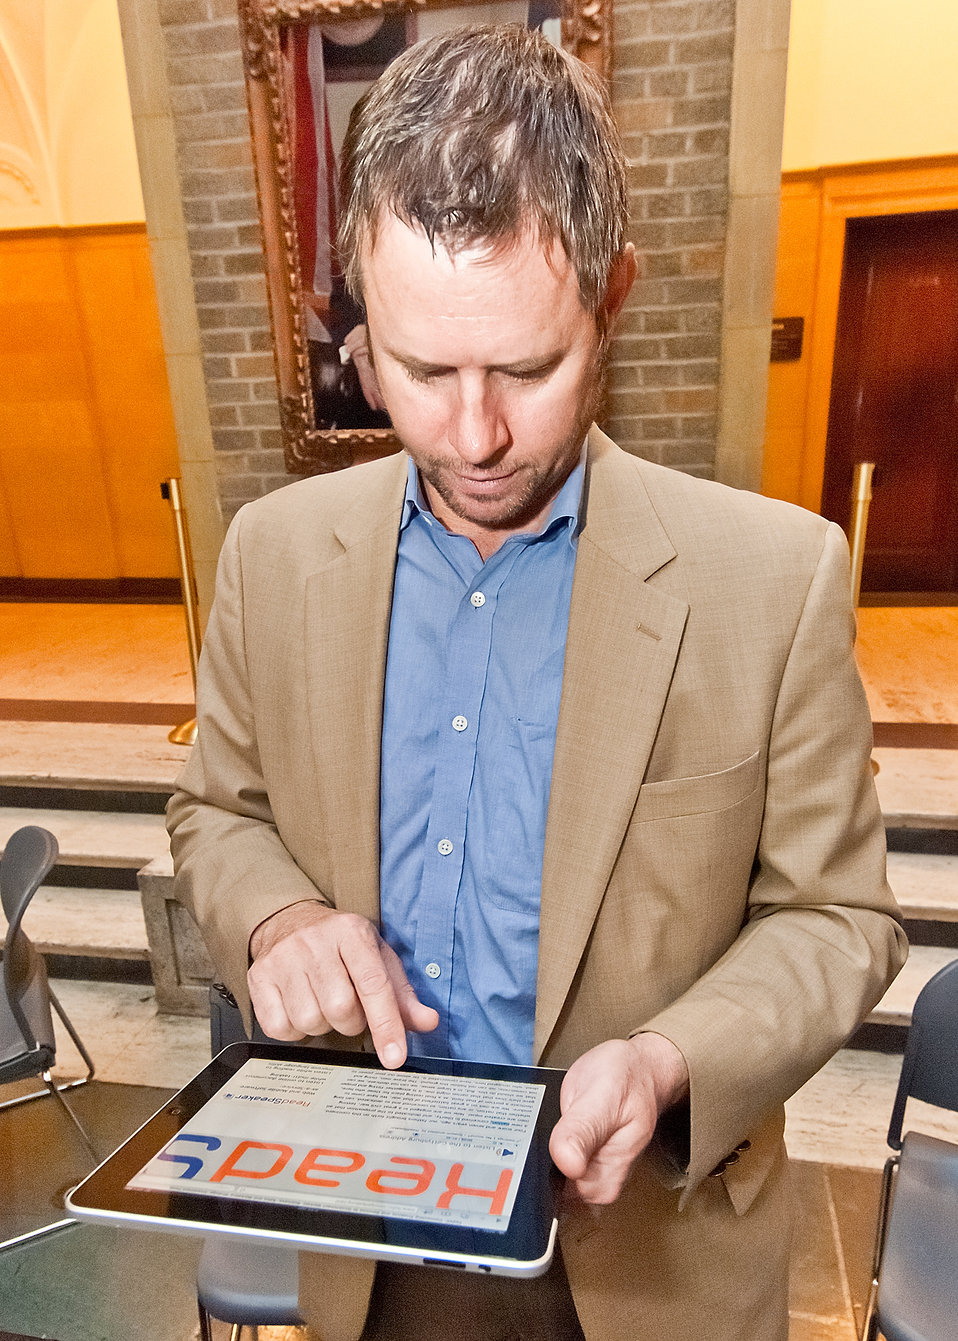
Chief Operations Officer of FEDVC Torsten Oberst demonstrates how their software reads any web content/text into an audio Cloud service at the U. S. Department of Agriculture (USDA) Section 508 and Disability Awareness Program in Washington, DC, on Monday, Oct. 31, 20.101. Sponsored by the Office of the Chief Information Officer, the theme of the event was, “Turning the Key to Unlock and Eliminate Barriers by Providing Accessibility to All.” Section 508 applies to the development, procurement, maintenance or use of electronic and information technology allowing accessibility and awareness to promote inclusiveness to employees and the public with disabilities to information technology managed by the Federal government. Section 508 is part of the USDA’s Cultural Transformation Initiative to hire more employees with disabilities.